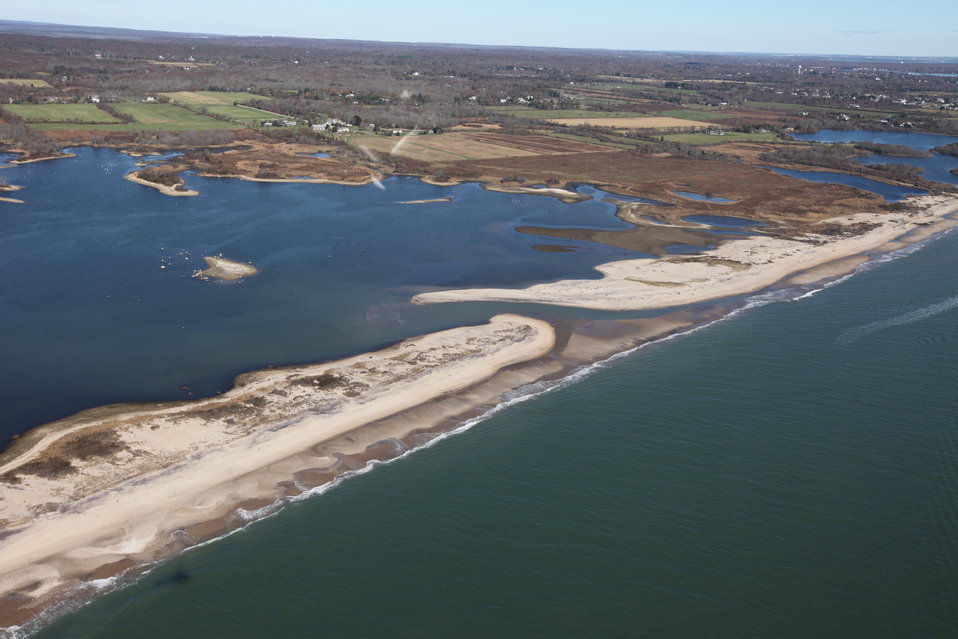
Breach at Trustom Pond (RI)

Breach at Trustom Pond caused by Hurricane Sandy. Trustom Pond had not naturally breached in over a decade prior to Hurricane Sandy.